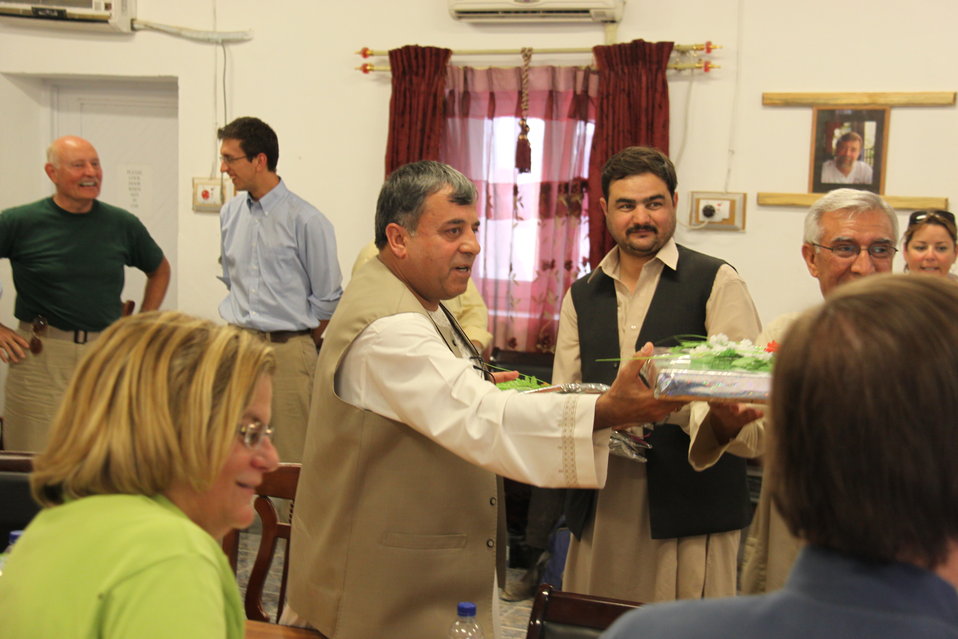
Meeting with Local Leaders in Kandahar